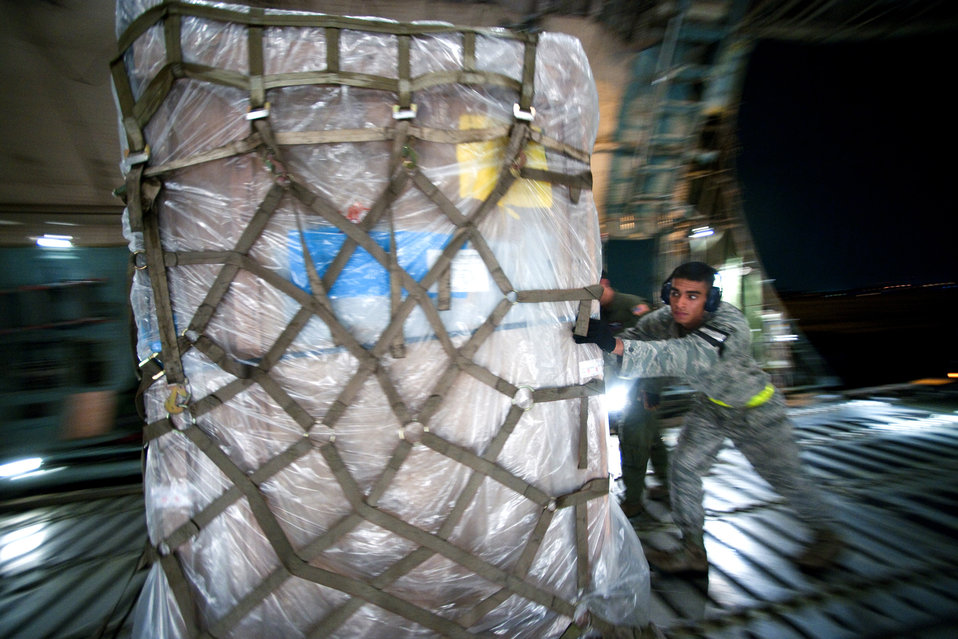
Rapid loading for the fight

Airman 1st Class Paul Madriles loads pallets onto a C-5 Galaxy Sept. 15, 2010, at Yokota Air Base, Japan. As the airlift hub of the western Pacific, Airmen at Yokota AB work operations 24/7 to keep inbound and outbound aircraft moving efficiently. Airman Madriles is with the 730th Air Mobility Squadron there.